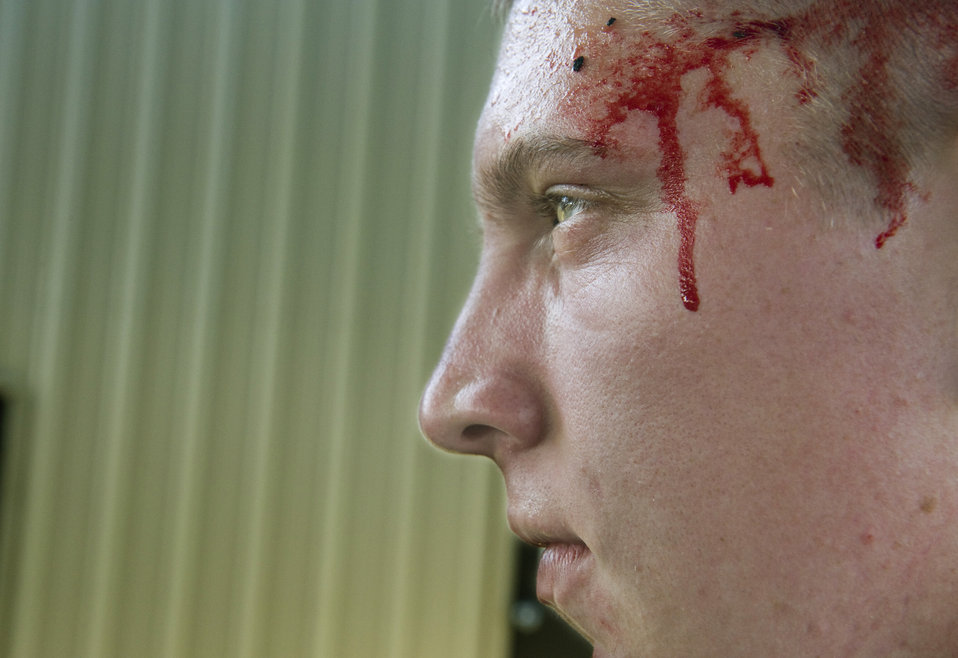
Instructors teach ROTC cadets defense techniques

An ROTC cadet looks for medical attention after being cut during combative training at Maxwell Air Force Base, Ala., July 22, 2010. The cadets learned extensive skills that will help them defend themselves during combat.